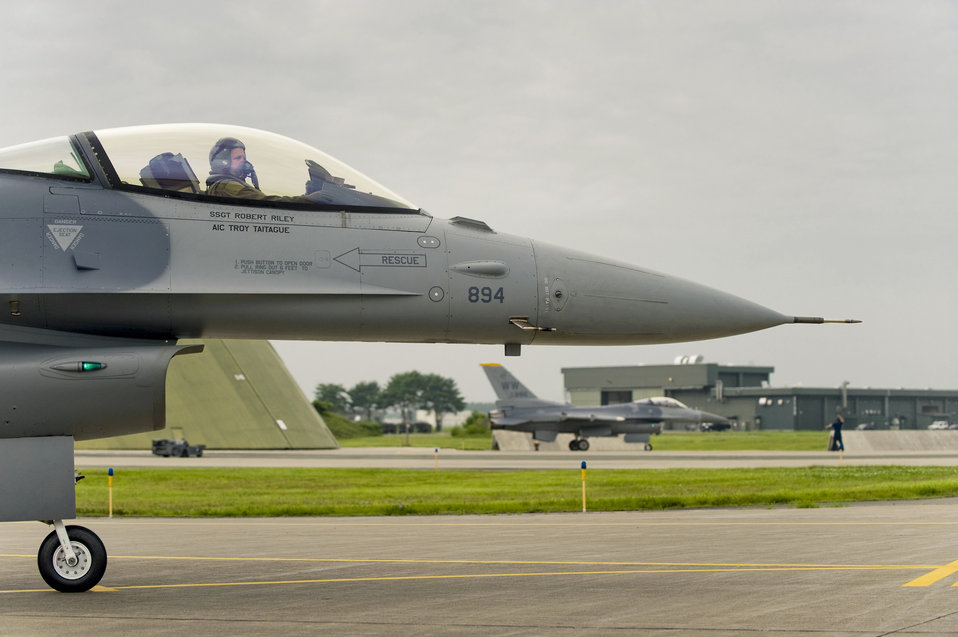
Falcon maintenance

Two F-16 Fighting Falcons park in front of hardened aircraft shelters following a training sortie Aug. 2, 2010, at Misawa Air Base, Japan. Maintenance crews from the 35th Aircraft Maintenance Squadron met the jets to assist with engine shut down and egress.